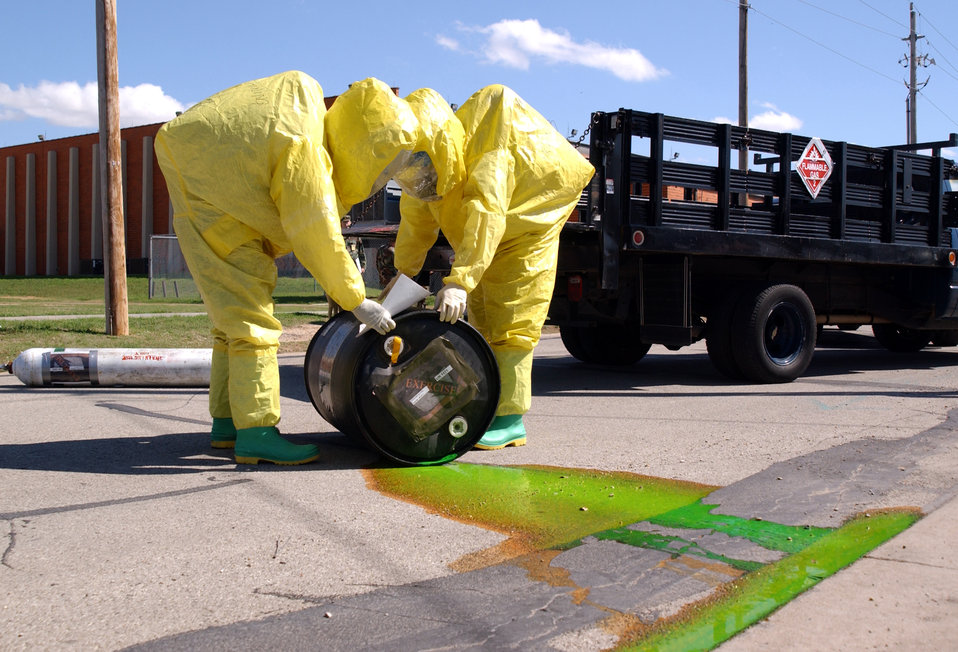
Rapid response

GOODFELLOW AIR FORCE BASE, Texas -- Department of Defense fire fighters remove a leaking container March 16 during a hazardous materials major accident response exercise here.